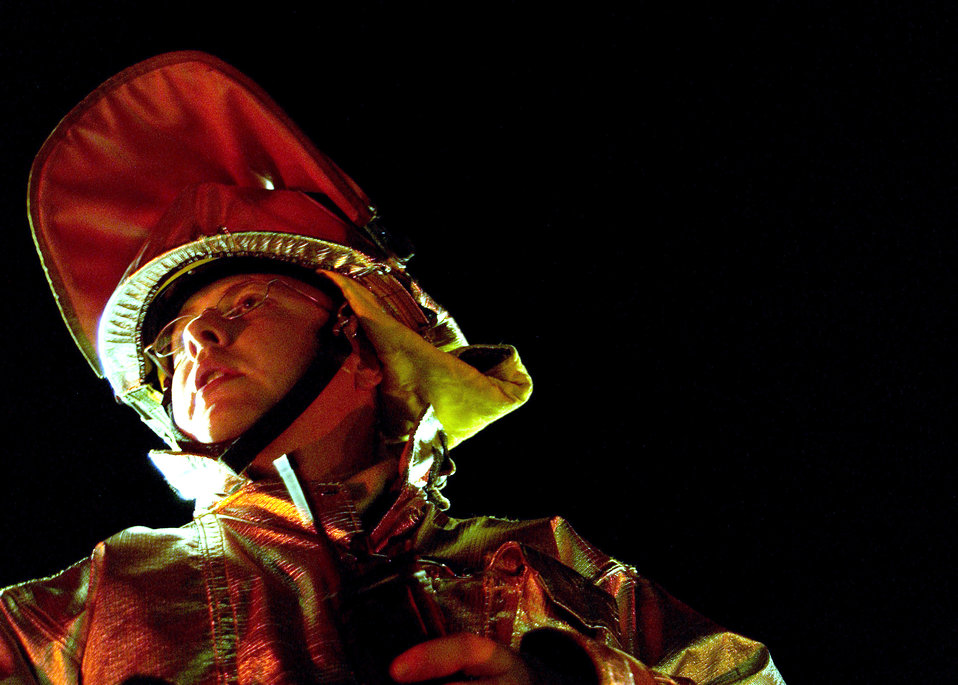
'Beverly' visits Guam

ANDERSEN AIR FORCE BASE, Guam -- Senior Airman Aaron Hale responds to a live fire on the fire training grounds here during Exercise Beverly Palm 05-07. The routine exercise is held several times a year to sharpen the mobility and wartime capabilities of participating servicemembers. Airman Hale is a firefighter with the 36th Civil Engineer Squadron.